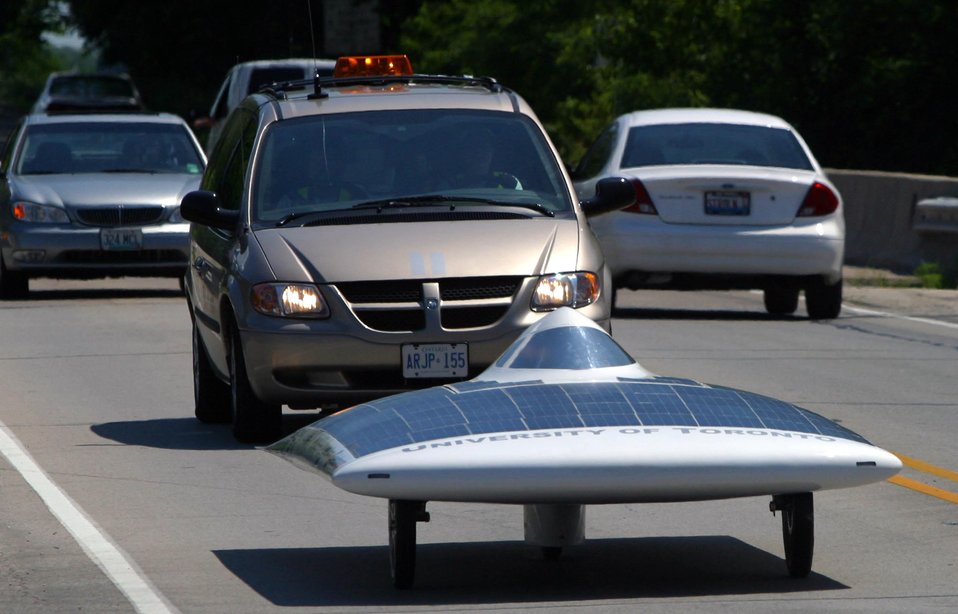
THE UNIVERSITY OF TORONTO VEHICLE TRAVELING AT A HIGHWAY SPEED ON ROUTE 66 DURING THE AMERICAN SOLAR CHALLENGE.

THE AMERICAN SOLAR CHALLENGE, THE LONGEST SOLAR CAR RACE IN THE WORLD, IS A DOE SPONSORED EDUCATIONAL EVENT IN WHICH TEAMS COMPETE TO BUILD AND RACE SOLAR-POWERED CARS. TWENTY UNIVERSITIES PARTICIPATED IN THIS YEAR'S EVENT WHICH STARTED IN CHICAGO, ILLINOIS ON JULY 13 AND FOLLOWED ROUTE 66 FOR 2300 MILES TO CLAREMONT, CALIFORNIA, ENDING ON JULY 23, 2003.